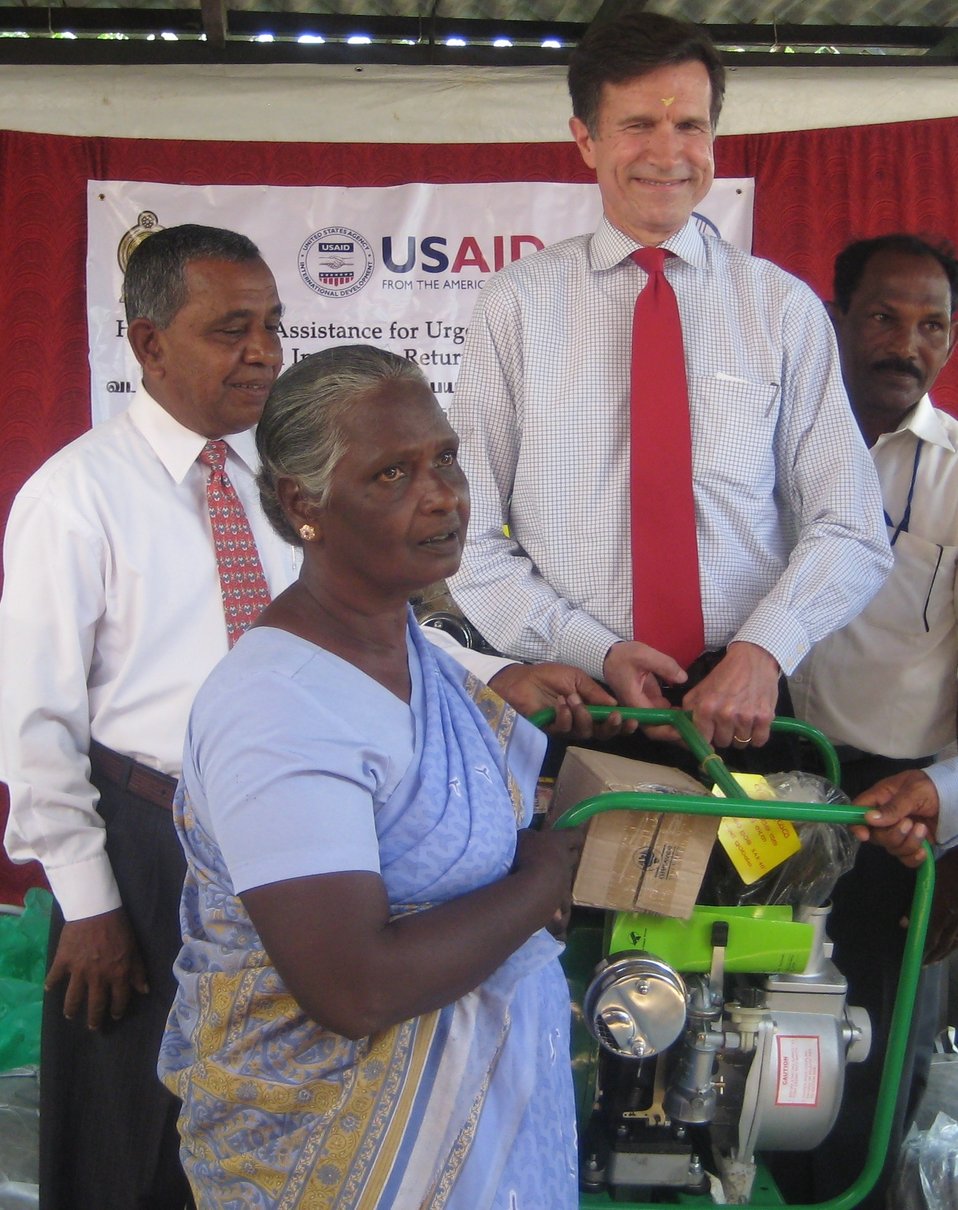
Assistant Secretary Blake Turns Over Water Pumps to Formerly Displaced Farmers in Sri Lanka

Assistant Secretary of State for South and Central Asian Affairs Robert O. Blake, former U.S. Ambassador to Sri Lanka, turns over water pumps to formerly displaced farmers in the North, in Kilinochchi, Sri Lanka, on May 3, 2011. The water pumps are one aspect of a $5.2 million U.S. Agency for International Development (USAID) project to assist recently resettled families in the North, conducted in partnership with the U.N. Food and Agriculture Organization (FAO), the Ministry of Agriculture and the Northern Council Departments of Agriculture, Livestock and Agrarian Services.